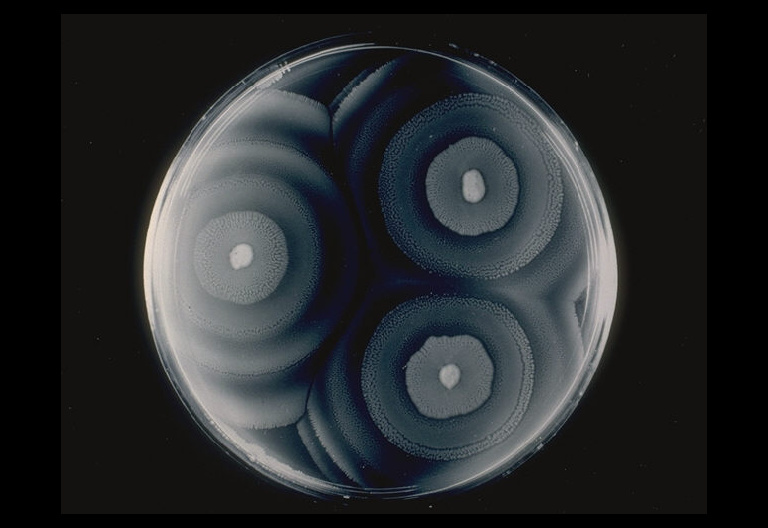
Proteus mirabilis. Dienes's reaction.